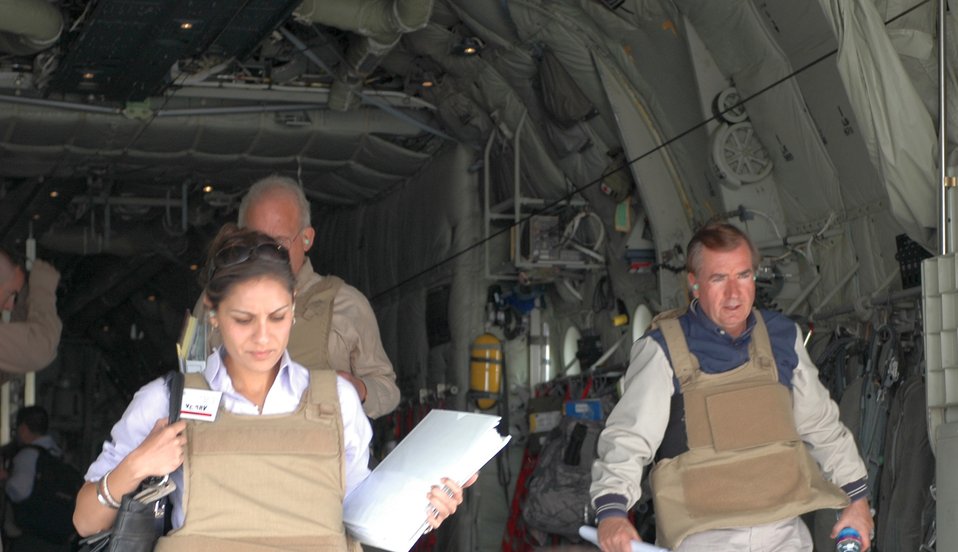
CODEL Berman